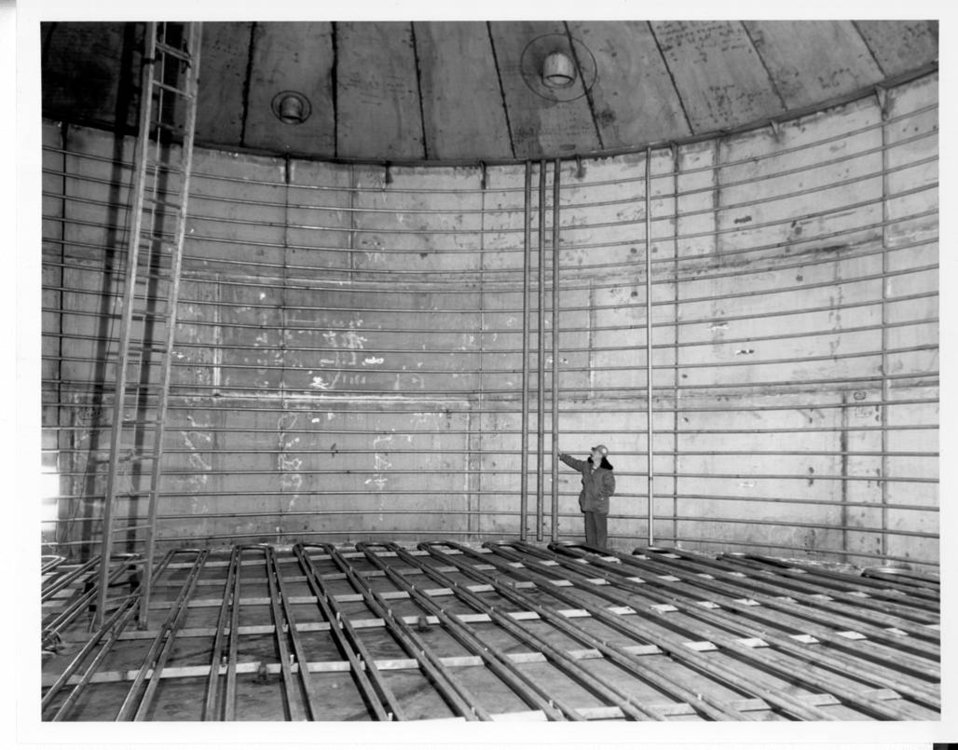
INTEC Tank

A worker standing inside of one of the underground tanks at Idaho Nuclear Technology and Engineering Center Tank Farm during its construction in the 1950’s.